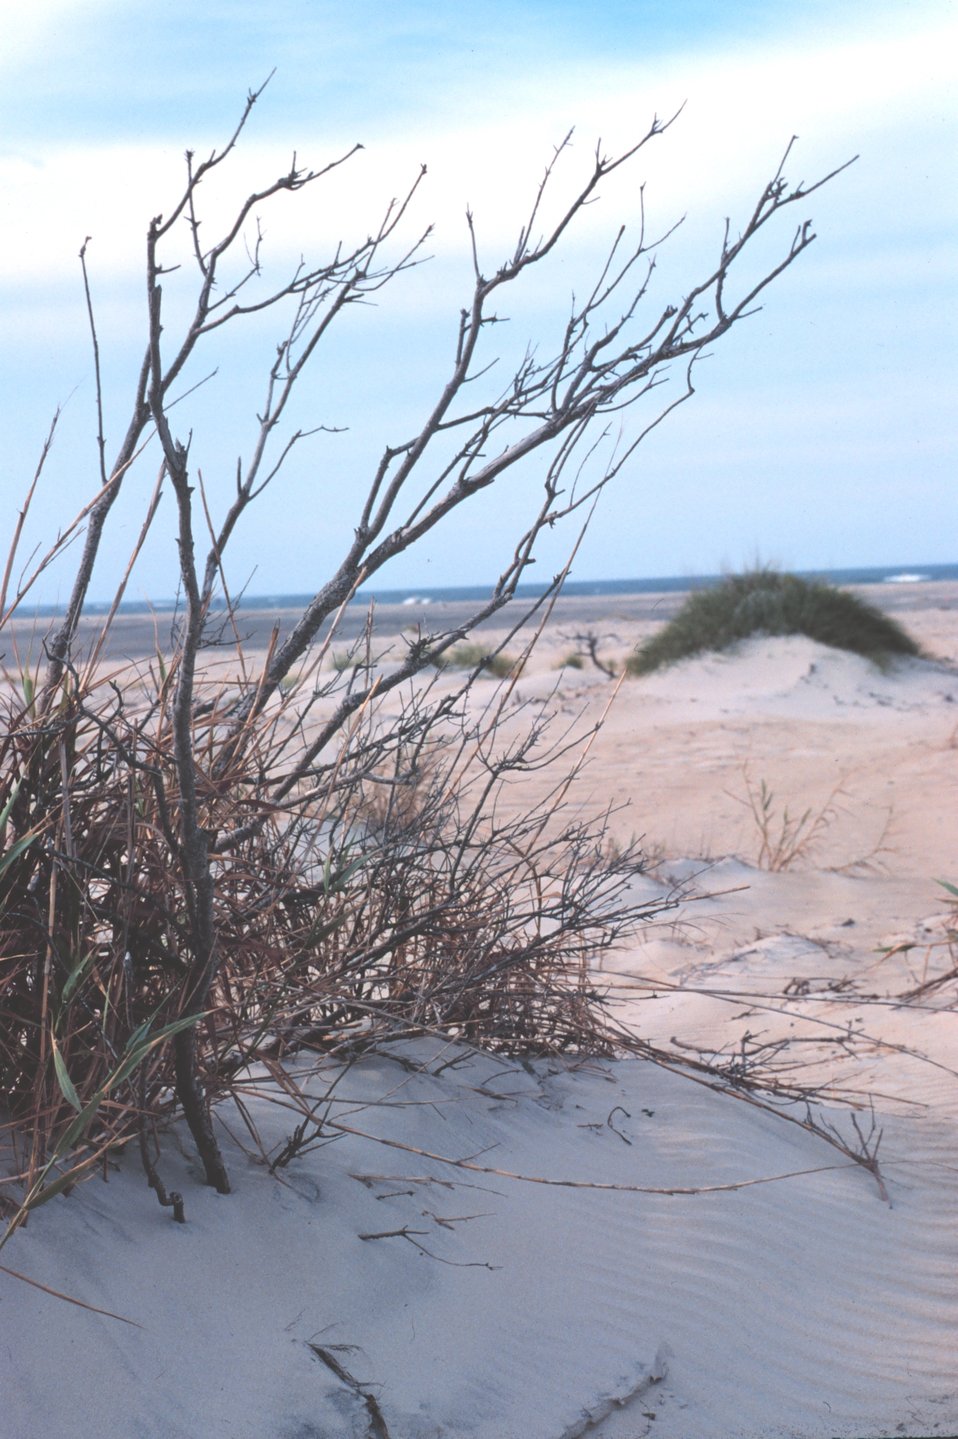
Wind-swept dunes near the abandoned Coast Guard Station